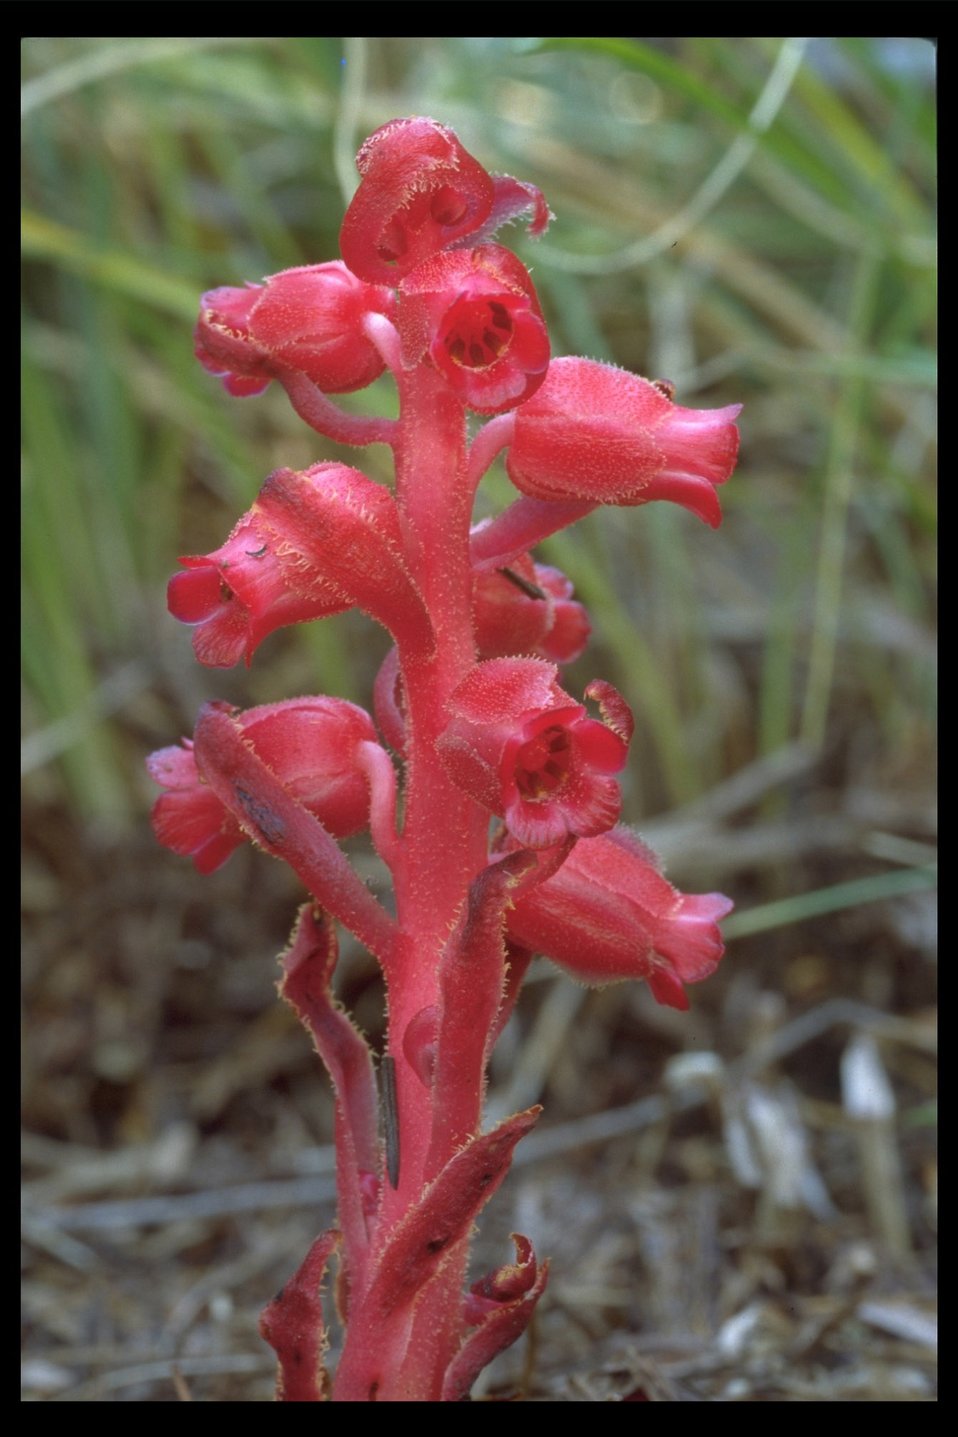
Snow Plant (Sarcodes sanquinea) in the Kalmiopsis Wilderness near Rancherie Creek.